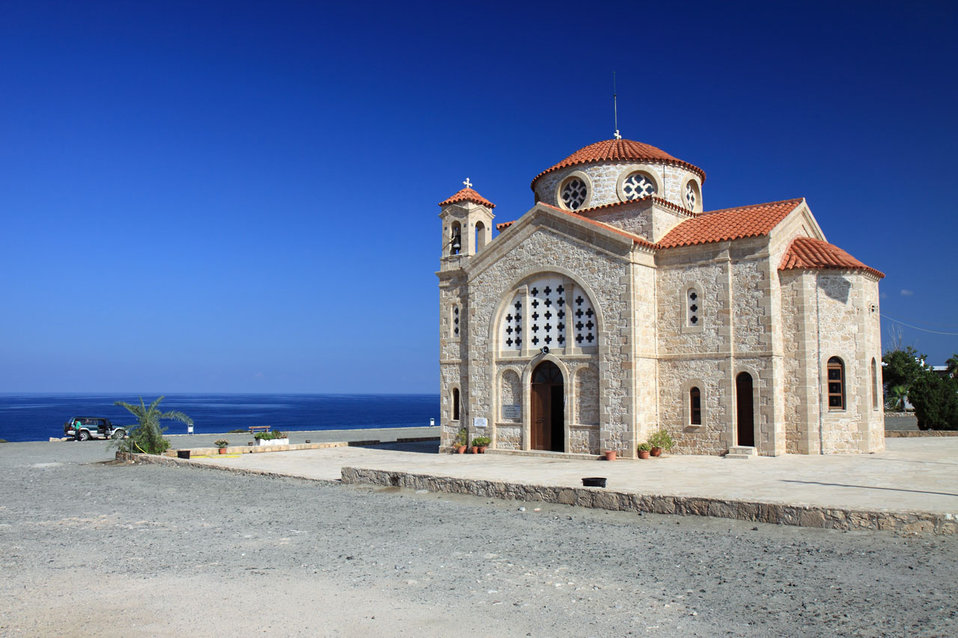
Church on coast

Church in agios georgios - cyprus.